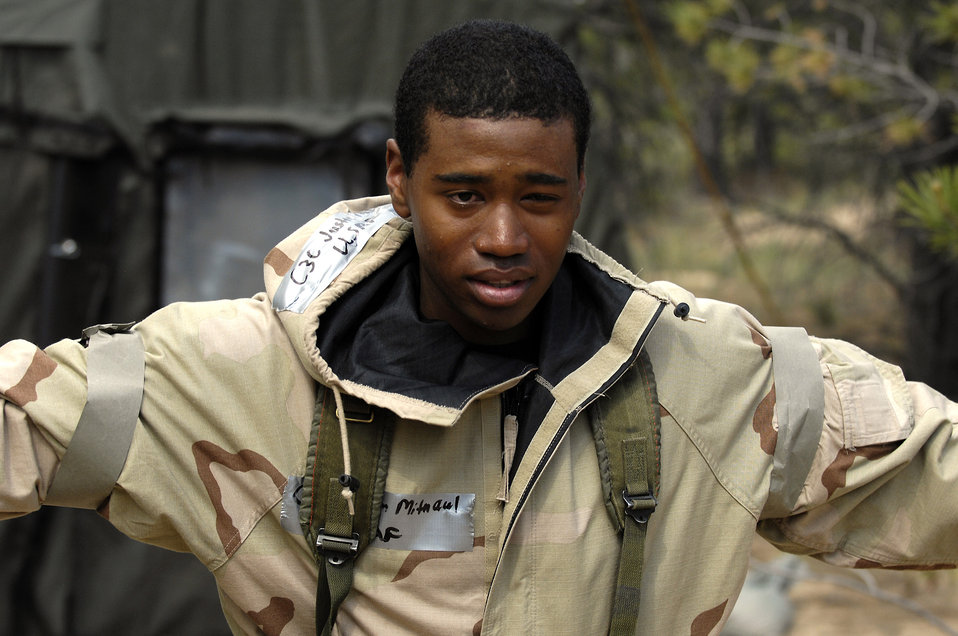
Global Engagement readies Academy cadets for future

U.S. Air Force Academy Cadet 3rd Class Justin Mitnaul has a new appreciation for the protection his gas mask provides after being exposed to an irritant during the 71-day summer training schedule June 19 at the Academy in Colorado. Approximately 1,200 Academy cadets are going through intensive training this summer to be ready to be globally engaged when they graduate.